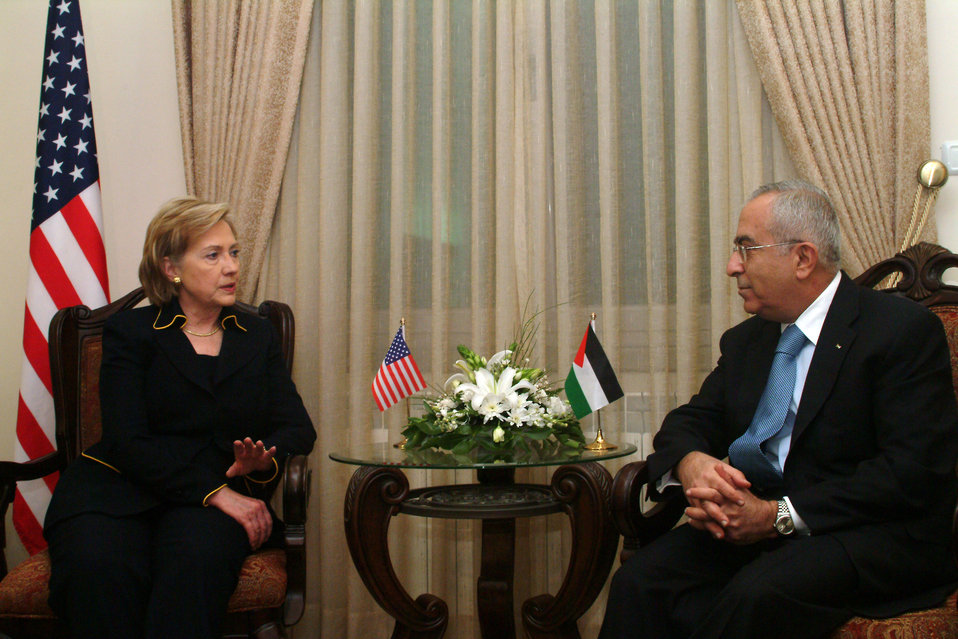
Secretary Clinton With Palestinian Authority Prime Minister

U.S. Secretary of State Hillary Rodham Clinton with Palestinian Authority Prime Minister Salam Fayad in Ramallah March 4, 2009.